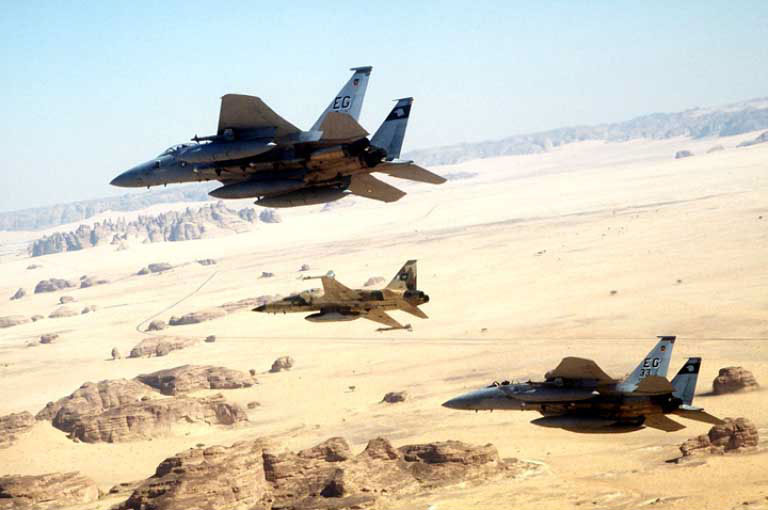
Two F15s and an AT-38 over the desert

1990's -- Two F15s and an AT-38 over the desert